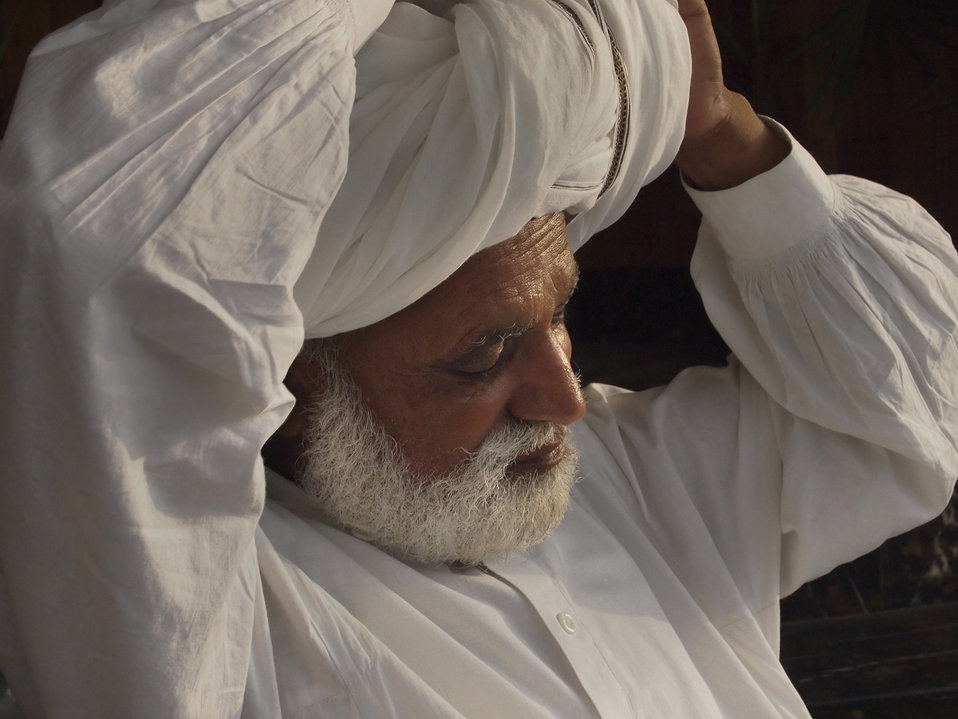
Islamabad, September 24, 2012 – Photo by Ammad Ahmad Khan, taken at Lake View Park, Rawal Lake, Islamabad - Shot from a USAID-organized 'photo camp' for 16 young aspiring journalists from FATA.